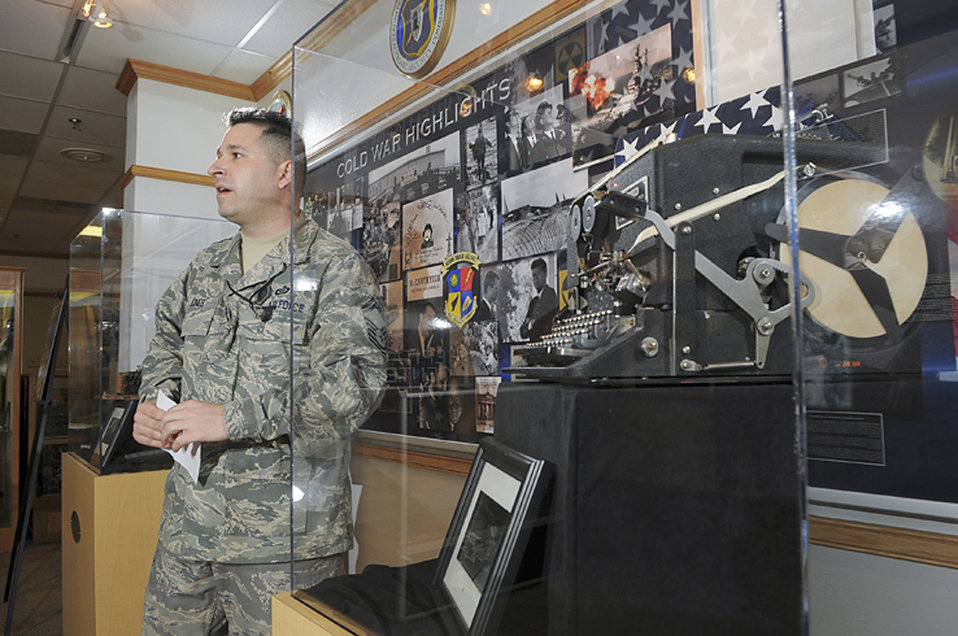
Historians write their own chapter with AF awards

Senior Master Sgt. Benjamin Jones from the Air Force Intelligence Surveillance and Reconnaissance Agency History Office explains the intricacies of the World War II era Sigaba cryptologic machine displayed in the Agency's Heritage Center.